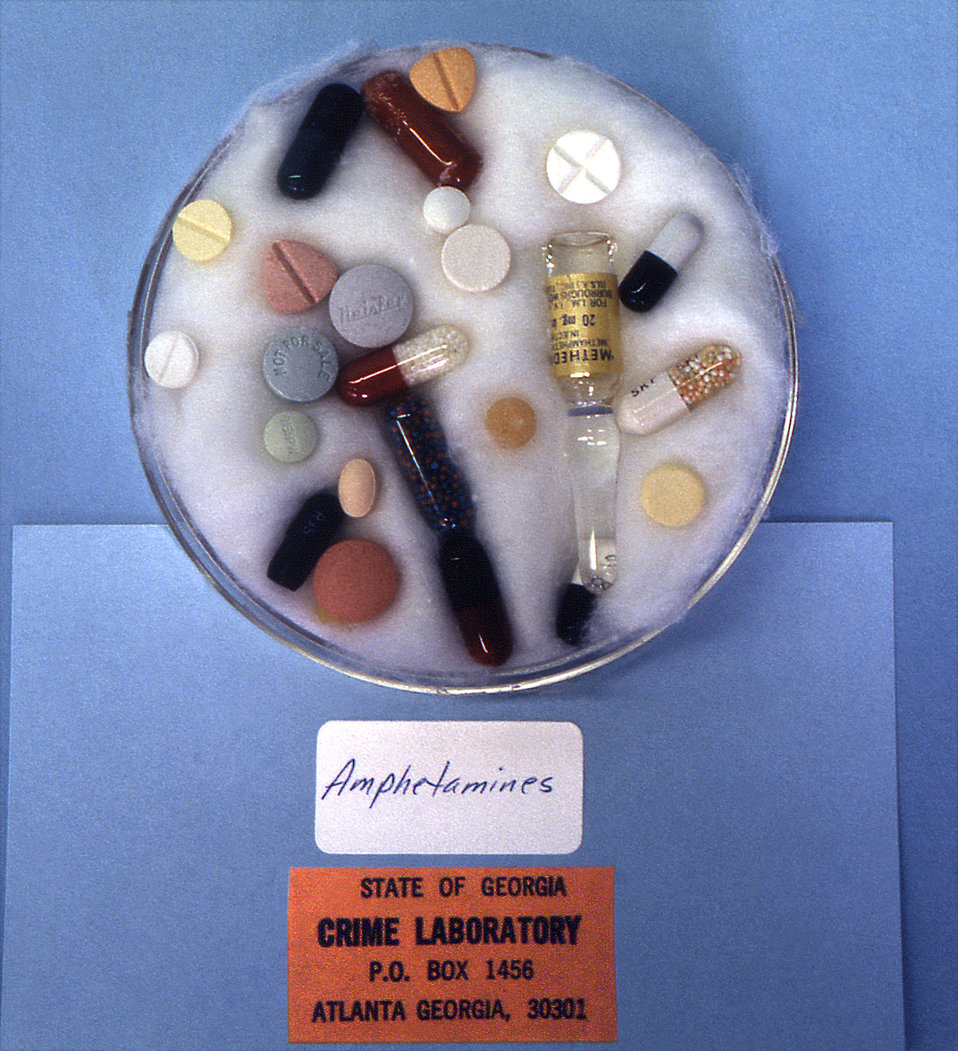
Lined with cotton, this culture plate contains an assortment of amphetamines, which had been confiscated during the control of criminal activities in and around the city of Atlanta, Georgia during 1973.